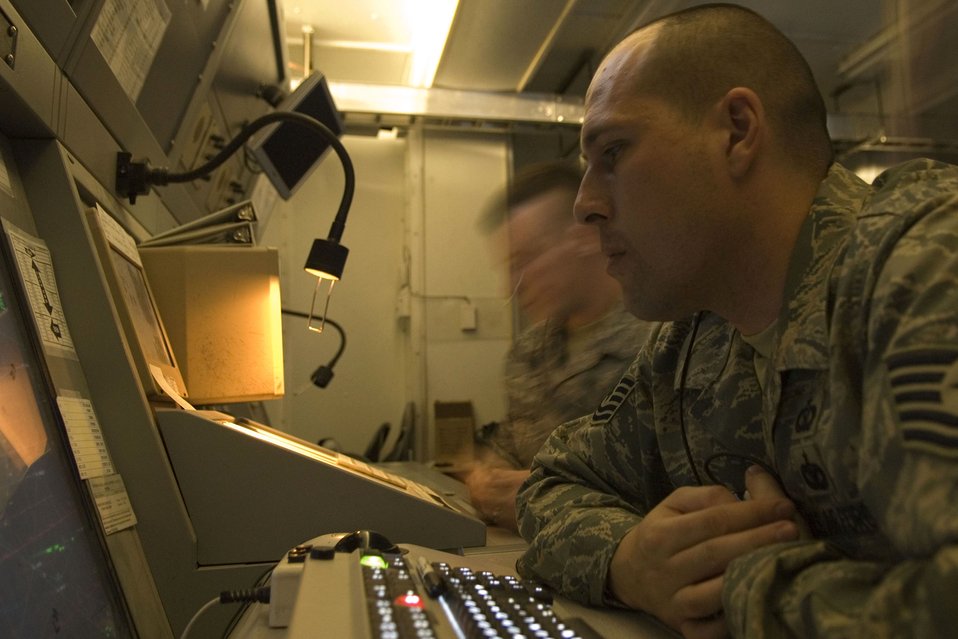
Directing traffic

Tech. Sgt. Russell Tomei communicates with aircraft over Iraq Jan. 18 at Balad Air Base, Iraq. Air traffic controllers have the capability to communicate and control routes for multiple aircraft simultaneously. Sergeant Tomei is a 332nd Expeditionary Operation Support Squadron air traffic controller deployed from Travis Air Force Base, Calif.